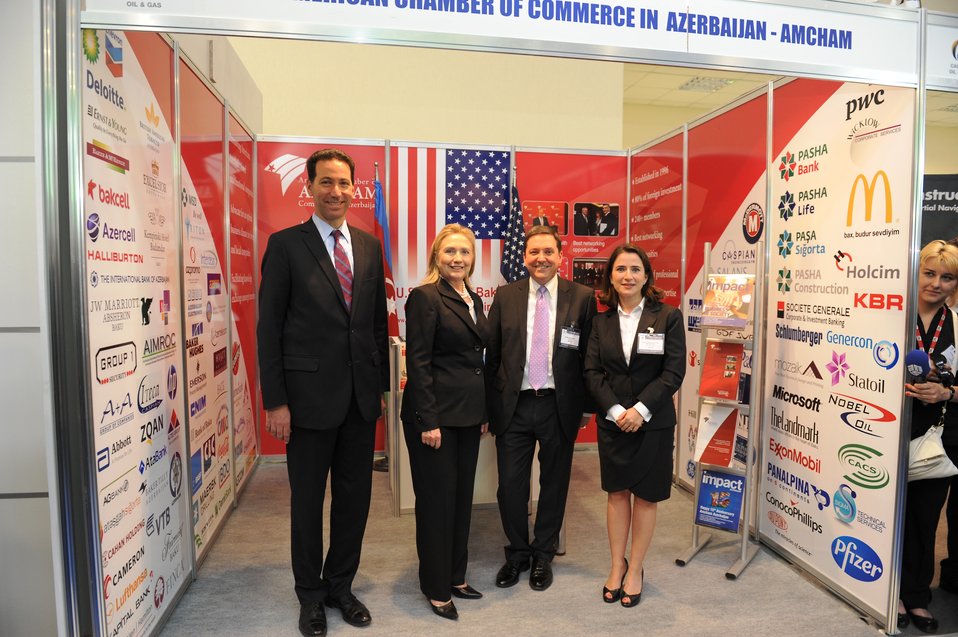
Secretary Clinton Visits the AmCham in Baku

U.S. Secretary of State Hillary Rodham Clinton visits the American Chamber of Commerce in Baku, Azerbaijan, on June 6, 2012.